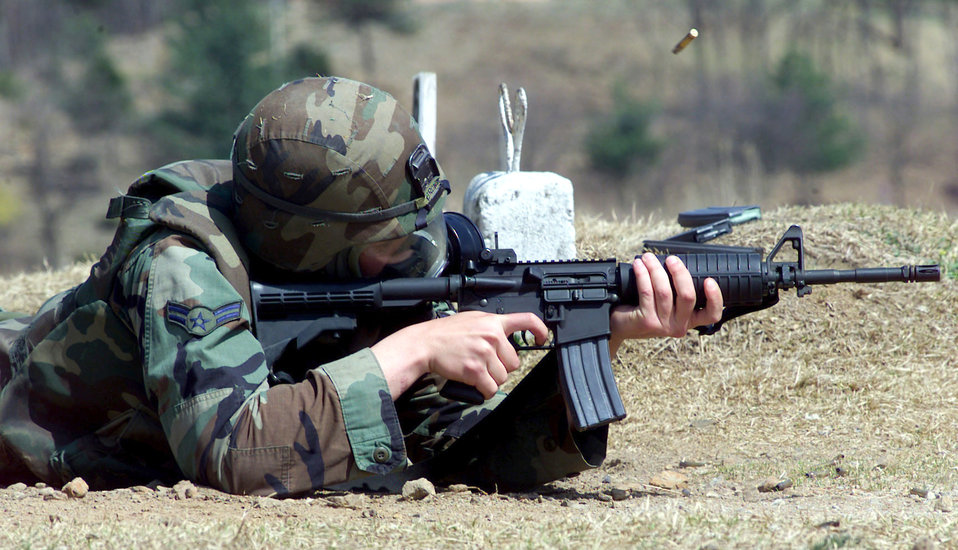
Laying down fire

TWIN BRIDGES TRAINING AREA, South Korea -- Airman 1st Class Jonathan Brown shoots at pop-up targets during the shooting portion of Tiger Challenge 2004 here April 8. The weeklong annual competition tests tactical air control and command technicians on their navigation skills, job knowledge, physical endurance and marksmanship. Airman Brown is assigned to the 607th Air Support Operations Squadron at Camp Casey, South Korea.